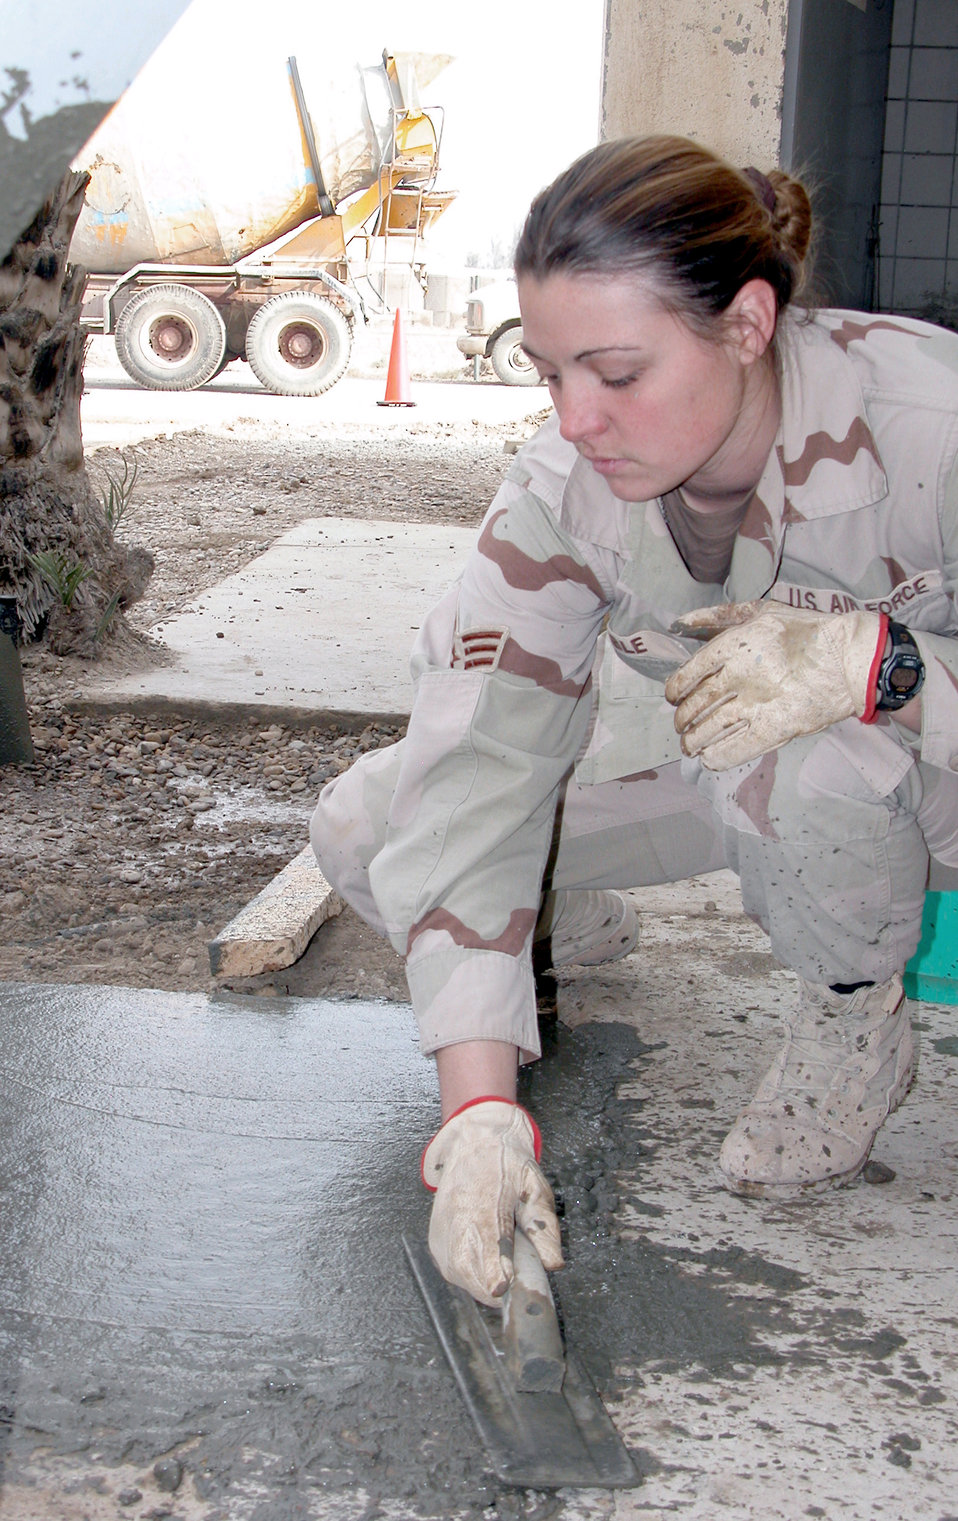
Smoothing things over

TALLIL AIR BASE, Iraq -- Senior Airman Angie Kimble smoothes concrete for a sidewalk project at the wing's operations center here Jan. 6. Civil engineers have kept busy with many quality-of-life projects. Airman Kimble is a structures journeyman deployed here from Yokota Air Base, Japan.